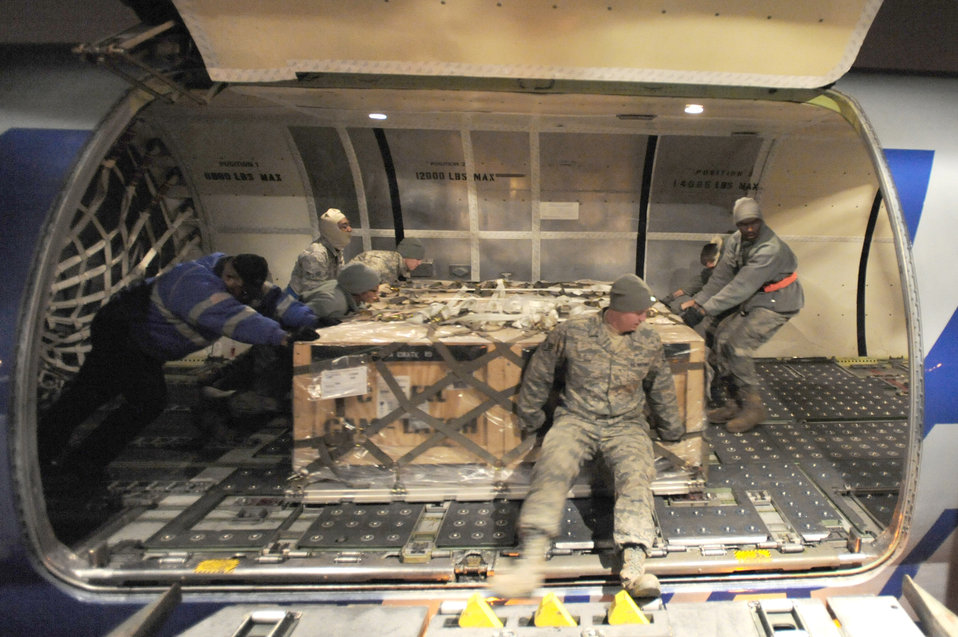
Whiteman submarine battery transport

Airmen from the 509th Logistics Readiness Squadron load pallets of Los Angeles-class submarine batteries into position before securing them in the cargo hold on a DC-8 cargo jet, Dec. 4, 2010, at Whiteman Air Force Base, Mo. The batteries were headed to Guam to aid a nuclear-powered submarine.